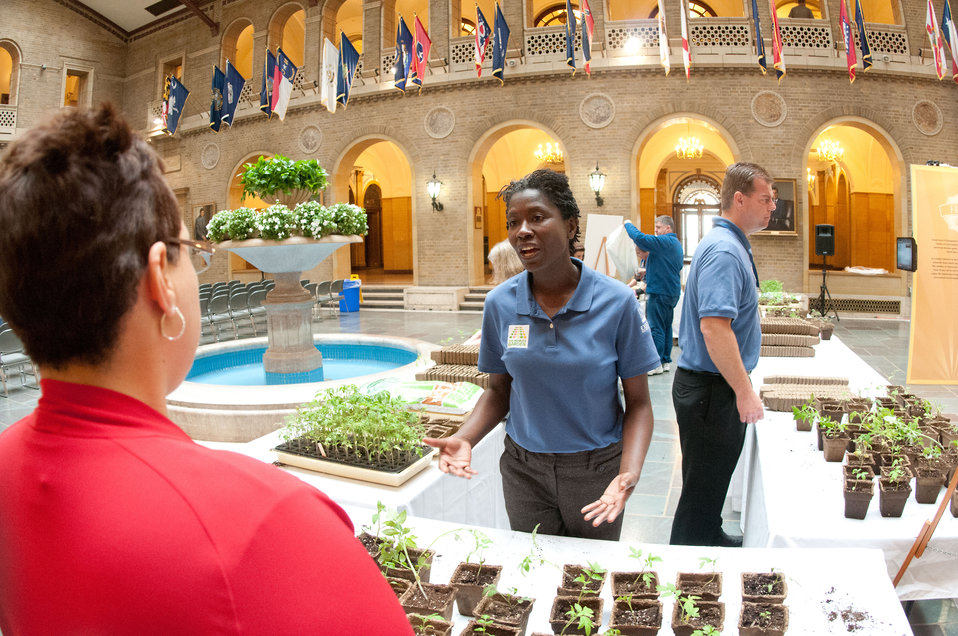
Agriculture's National Institute of Food and Agriculture agency volunteer Executive Master Gardener Effie Baldwin, talks with fellow employees about the joys and caring of ‘Abraham Lincoln” Tomato seedlings that the People’s Garden Initiative is distributing to USDA employees in celebration of the 150th Anniversary of the U.S. Department of Agriculture, on Tuesday, May 15, 2012 in Washington, D.C., on this day, 150 years ago, President Abraham signed the Department into existence during the Civil War. In 1923 the H.W. Buckbee seed company of Rockford, Illinois introduced an heirloom variety named in honor of Illinois’ Greatest Son – Abraham Lincoln. The plant produces large beefsteak tomatoes in about 90 days. Volunteer Executive Master Gardeners planted and cultivated more that 3,000 seedlings ranging in size from one inch to more than a foot tall, so people could choose the best ones to transport home and to stagger the harvest by selecting a small and large seedling. One of the hopes of this event is to share the joys of gardening and harvesting, as well as the opportunity to share your harvest in your community. Seed packets are being distributed to People’s Gardens worldwide.